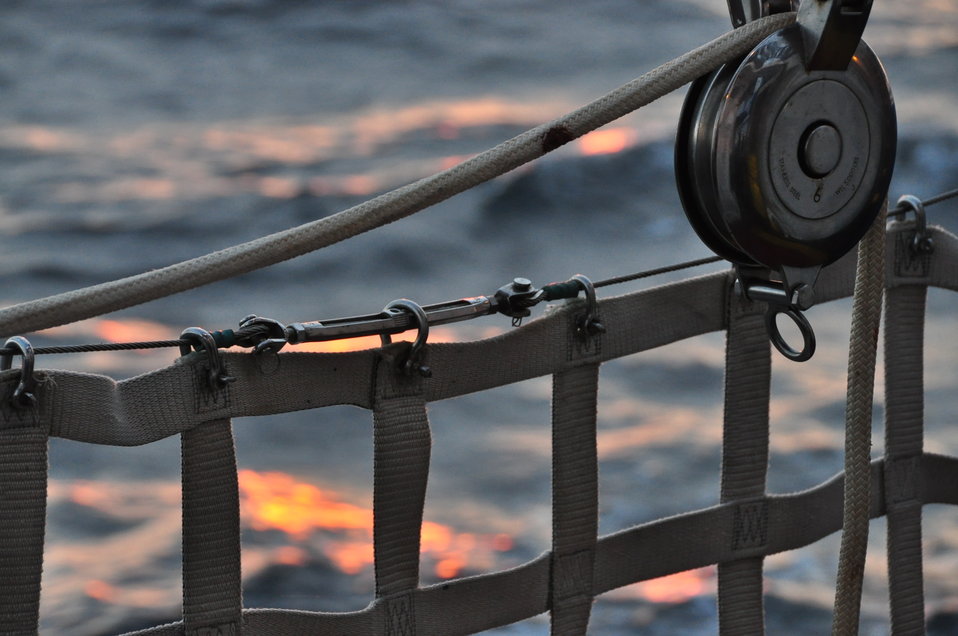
August 5, 2011 Reflections of the sunset